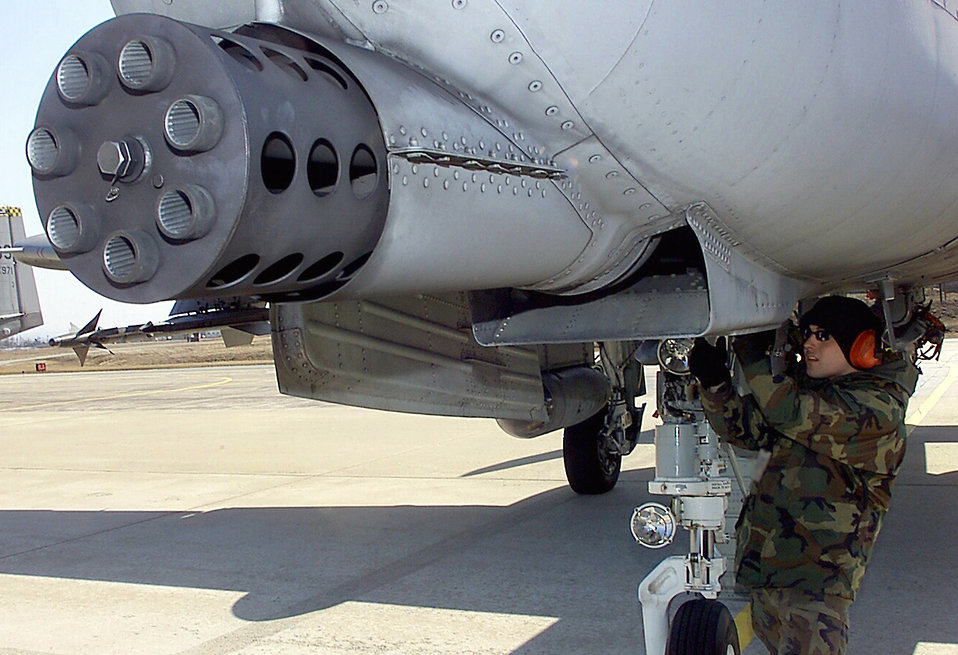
Gun check

OSAN AIR BASE, South Korea -- Senior Airman Andres L. Munoz inspects the gatling gun of an A-10 Thunderbolt II during an end of runway inspection here March 3. Senior Airman Munoz is a weapons specialist with the 51st Aircraft Maintenance Squadron.